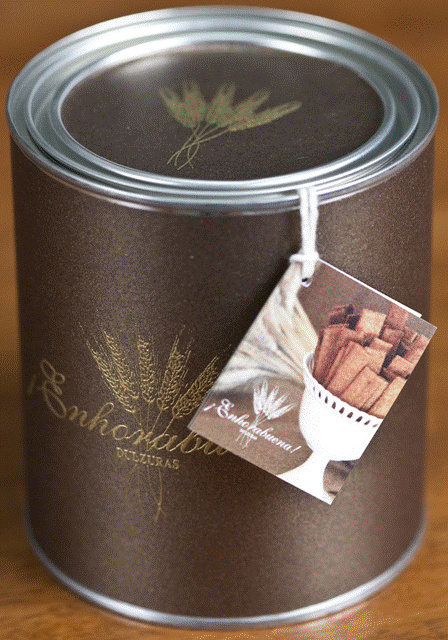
RECALLED - Guava Sticks

January 3, 2012 - Product Recall - Enhorabuena! Issues Allergy Alert On Undeclared Milk, Wheat, Tree Nuts, and Eggs in “Palitos de Guayaba” (Guava Sticks).